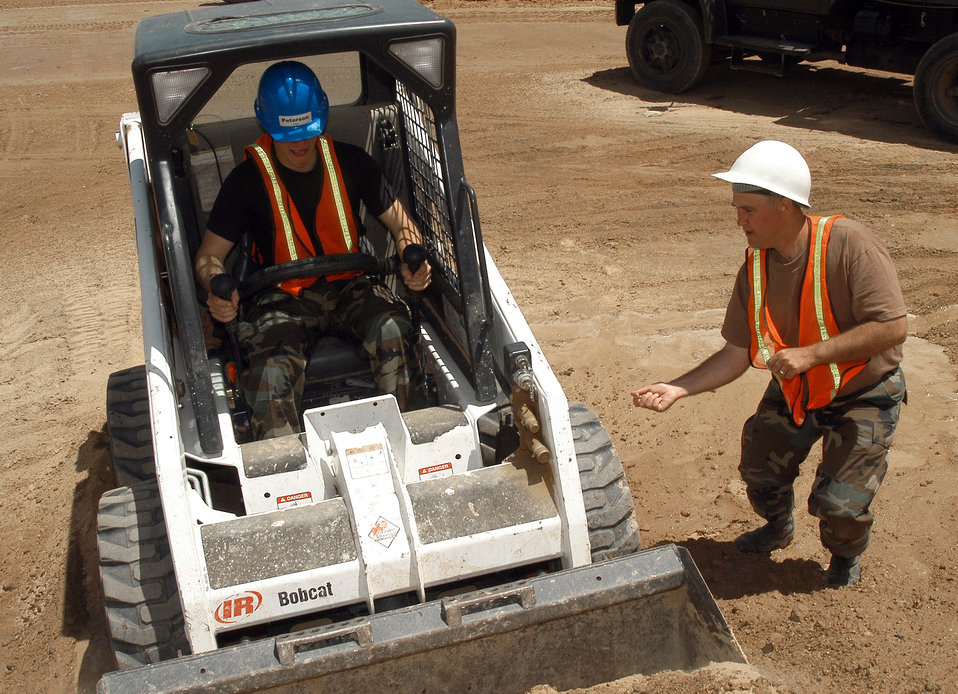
Cadets get 'constructive'

U.S. AIR FORCE ACADEMY, Colo. -- Cadet Jesse Peterson uses a Bobcat to move dirt with encouragement from Tech. Sgt. Rickey Haman, of the academy. Each summer, cadets in the field engineering readiness laboratory here build Navajo hogans to learn civil engineering from Air Force craftsmen. Once the homes are completed, they are donated to Southwestern Navajo tribes.